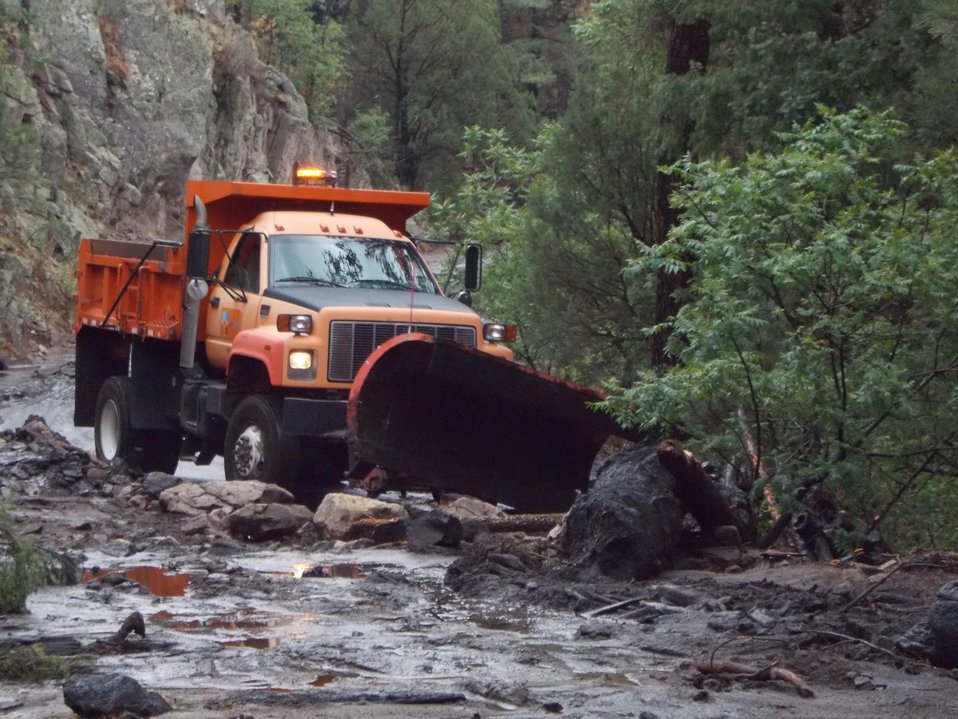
New Mexico Department of Transportation removes debris and sediment from Hwy 152 after a rainstorm near Kingston, NM. The debris is a result of the Silver Fire in Gila National Forest near Kingston, NM, which began on Jun. 7, 2013 by a lightning strike, has burned an estimated 138,705 acres and is 85% contained.